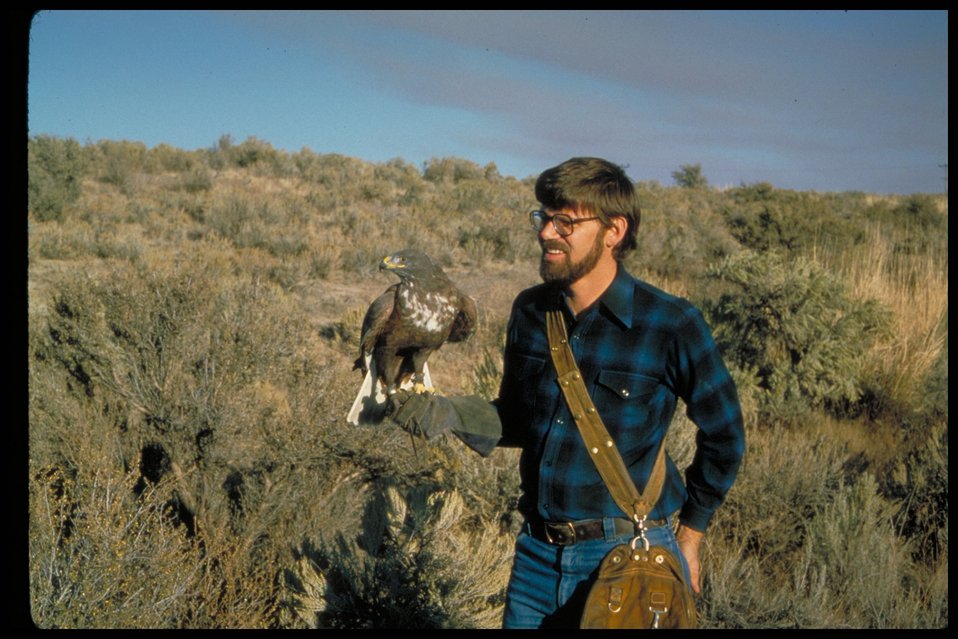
Ferrugenous Hawk Birds of Prey National Conservation Area BOP Owyhee Field Office LSRD Lower Snake River District